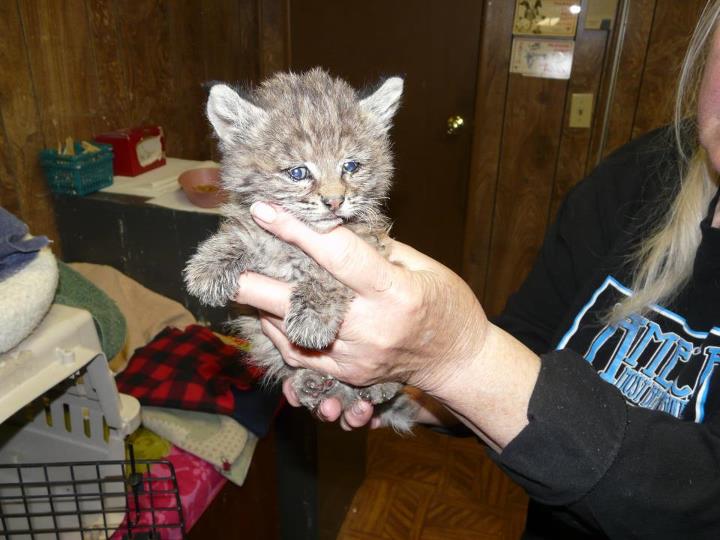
Rescued Bobcat Kitten

A Lake Tahoe Wildlife Care facility volunteer holds “Chips” an orphaned Bobcat kitten recovered from the Chips Fire near Lake Almanor, CA on Sep. 5, 2012. Mad River Hand Crew superintendent Tad Hair found the Bobcat kitten wandering along the side of the road, alone and dazed on Aug. 25, 2012. The Lake Tahoe Wildlife Care group (LTWC) is a non-profit organization, run by volunteers, “whose function is to raise, rehabilitate and release orphaned and injured wild birds and animals.”